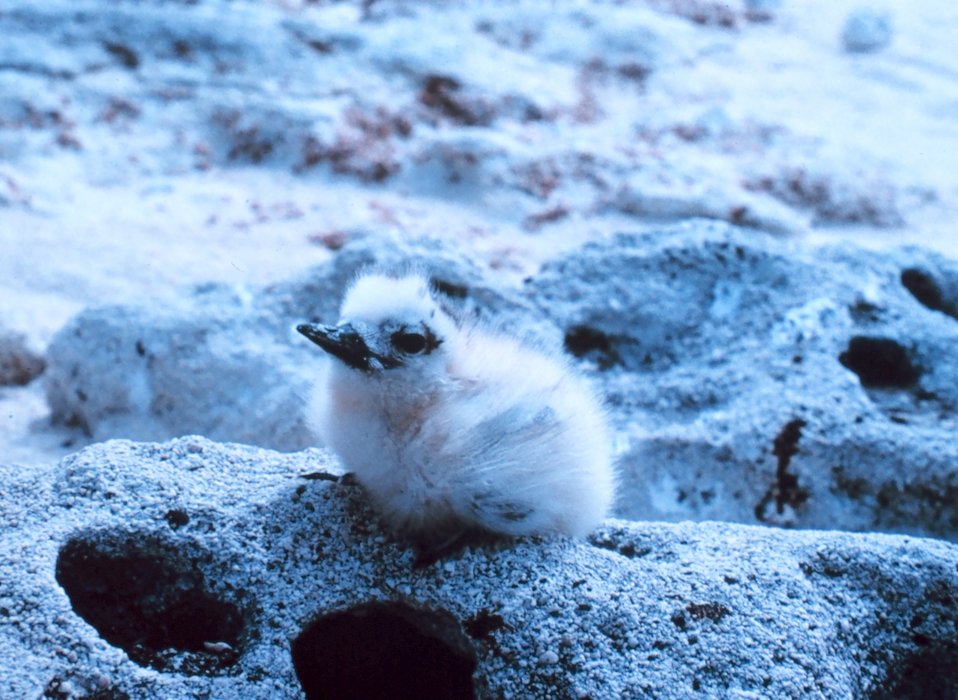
A white or fairy tern, Gygis alba.